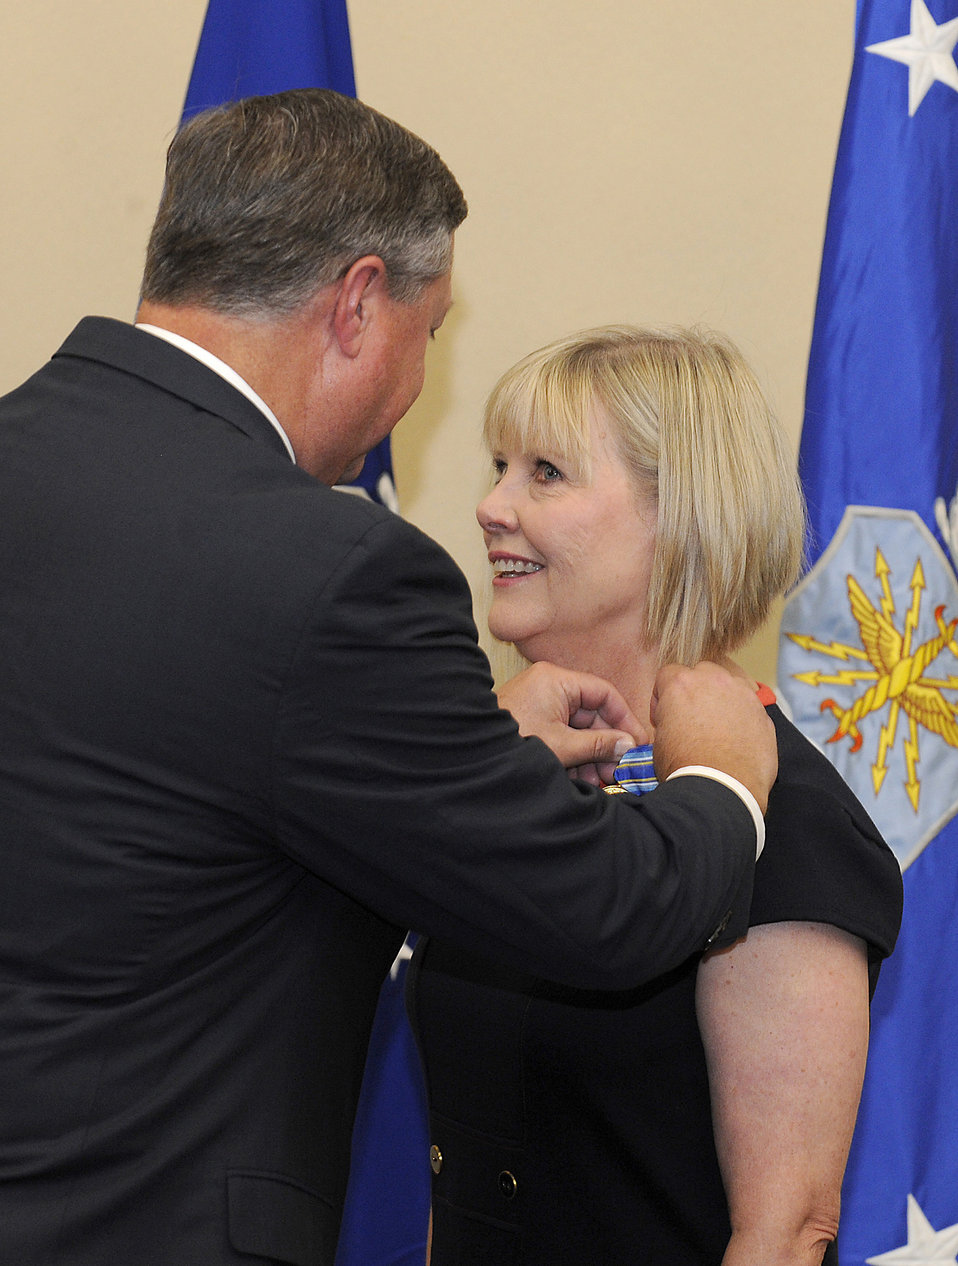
CSAF, spouse recognized for distinguished service

Suzie Schwartz, wife of Air Force Chief of Staff Gen. Norton Schwartz, receives the Air Force Distinguished Public Service Award from Secretary of the Air Force Michael Donley in a ceremony at Joint Base Andrews, Md., Aug. 9, 2012.